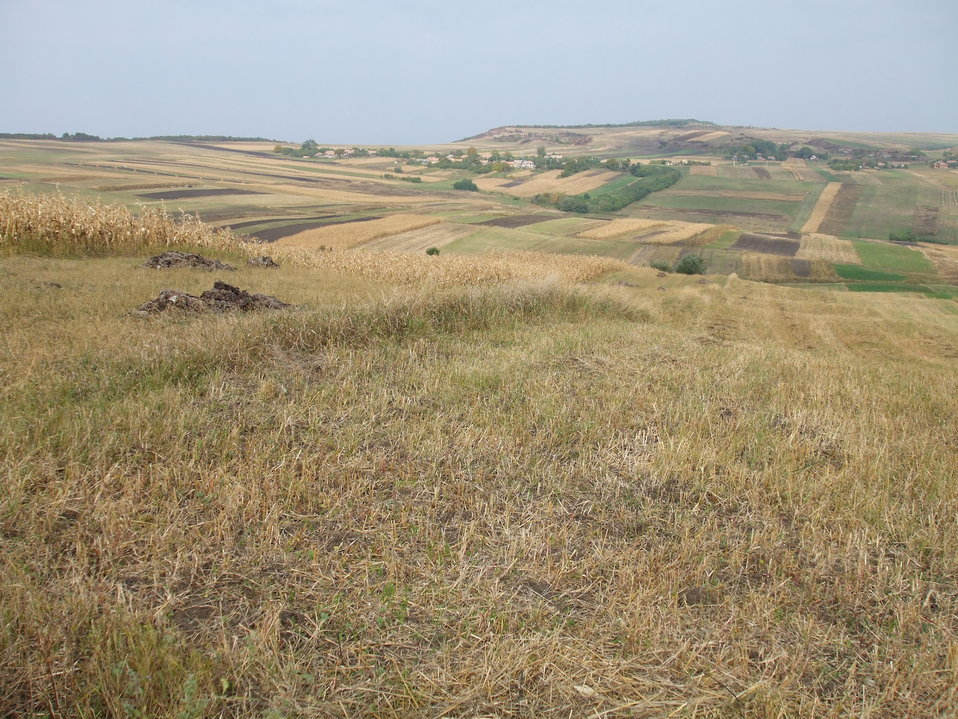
Română: Imagini-Damburile,Cluj